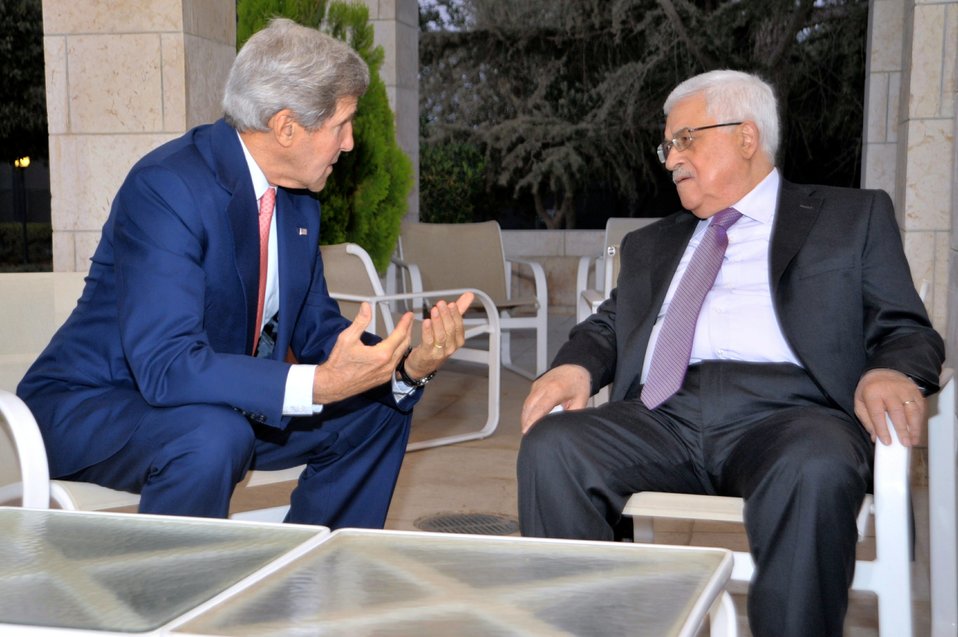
Secretary Kerry Speaks With Palestinian Authority President Abbas

U.S. Secretary of State John Kerry sits with Palestinian Authority President Mahmoud Abbas before they meet and celebrate iftar, the breaking of the daily fast during the Islamic holy month of Ramadan, in Amman, Jordan, on July 16, 2013.